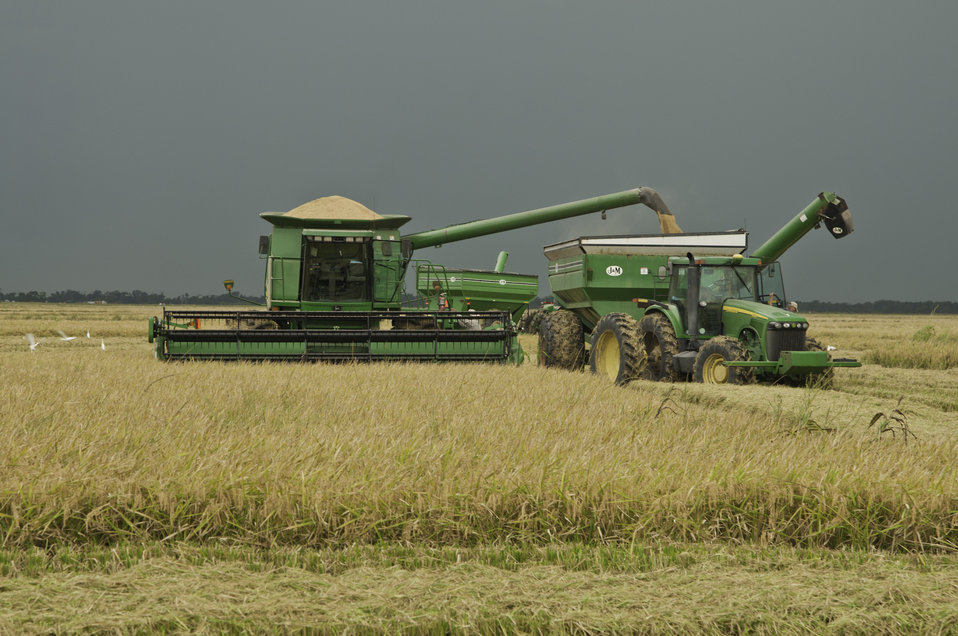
Rice is harvested in Rosharon, TX on Aug. 23, 2013.